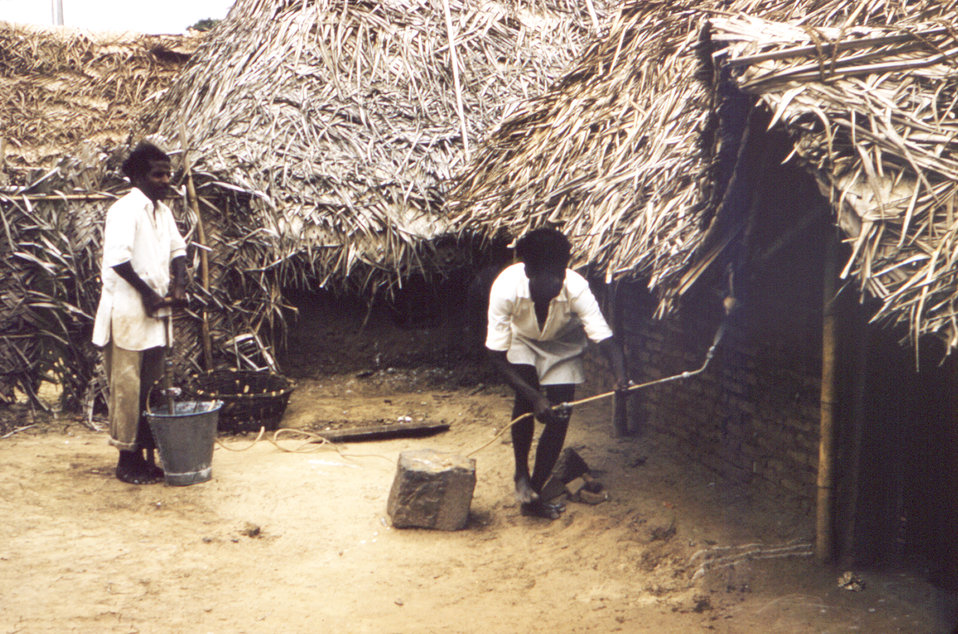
This historic 1961 image depicted two men in a village in India, as they were in the process of spraying the insecticide DDT (dichlorodiphenyltrichloroethane) in, and around huts. One man was using a bucket-pump, while the other was directing the spray using a hose. This activity was a part of the International Cooperation Administration (ICA) program which took place in India, and Viet Nam.